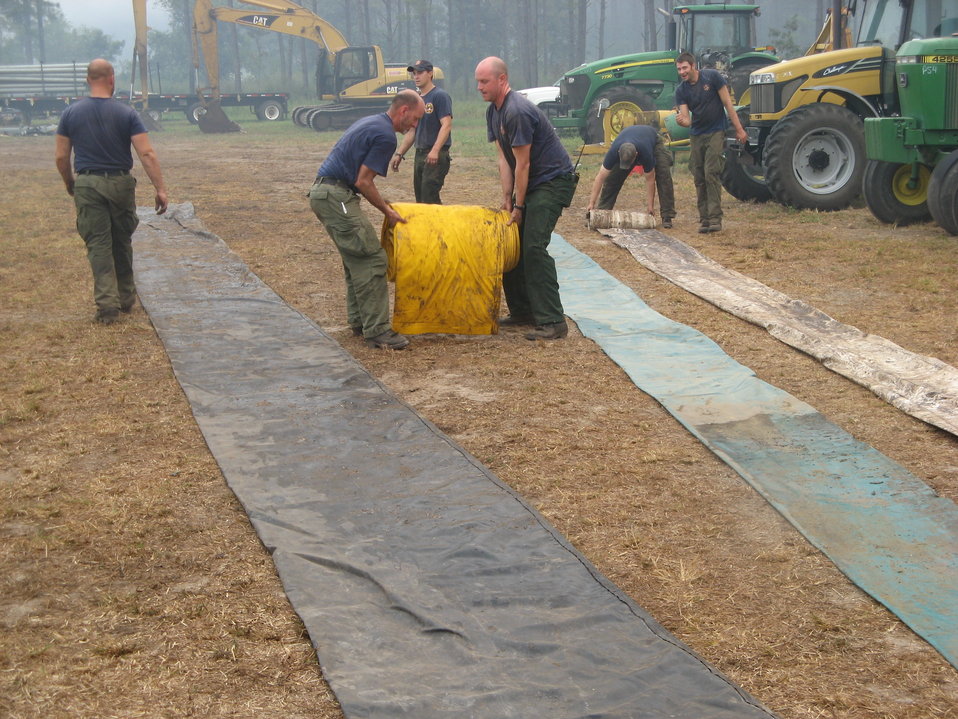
Rolling home

Suffolk, VA, August 2011. Workers roll up huge hoses used to pump high-volume pumps to deliver water and flood areas of the Lateral West Fire in Great Dismal Swamp. Tractors were used to run the pumps. All equipment was brought in from the fire in preparation for Hurricane Irene.